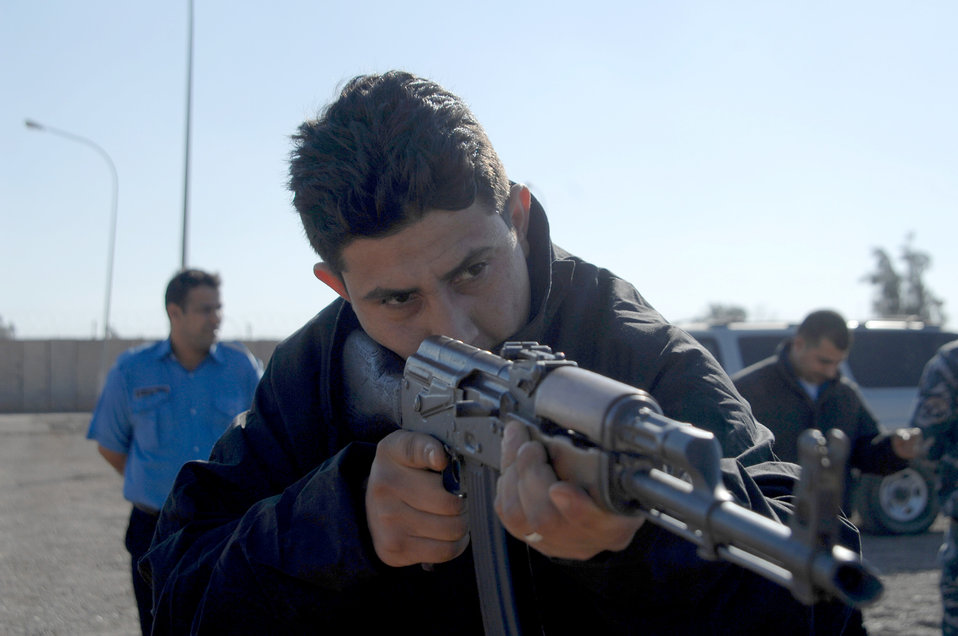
Taji Law Enforcement Academy

Iraqi police officers perform weapons-handling training at Taji Law Enforcement Academy Jan. 6, 2010, at Camp Taji, Iraq.